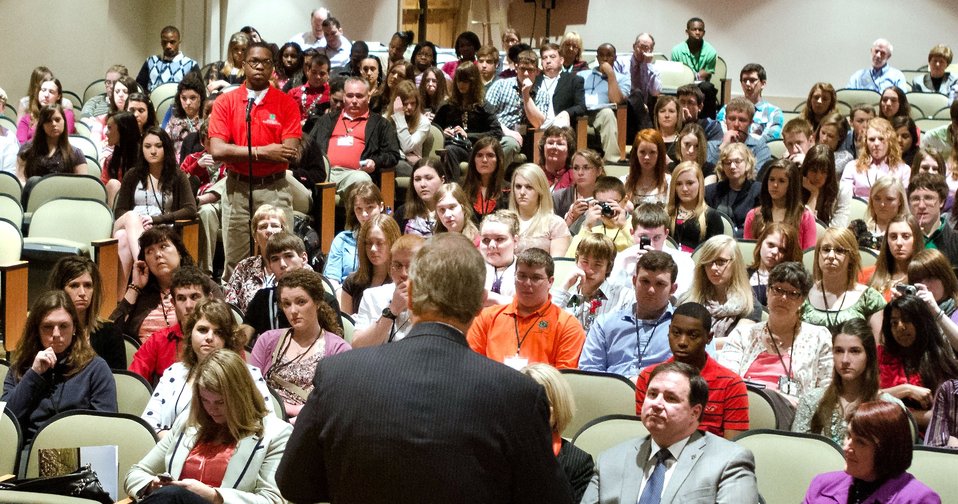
Agriculture Secretary Tom Vilsack speaks with 4-H members at the National 4-H Youth Center in Chevy Chase, MD, on Monday, March 26, 2012. Questions to Secretary Vilsack, included topics such as energy, food security, People's Gardens, regulation, and labor, to name a few. 'For almost 100 years, USDA and 4-H have partnered to produce some of our nation's best and brightest, including farmers and ranchers who have supported the American economy and put food on our tables,' Vilsack said. 'You all are tomorrow's leaders. We need you to think big, innovate and help tackle the important challenges standing between us, a stronger middle class and a stronger nation.'